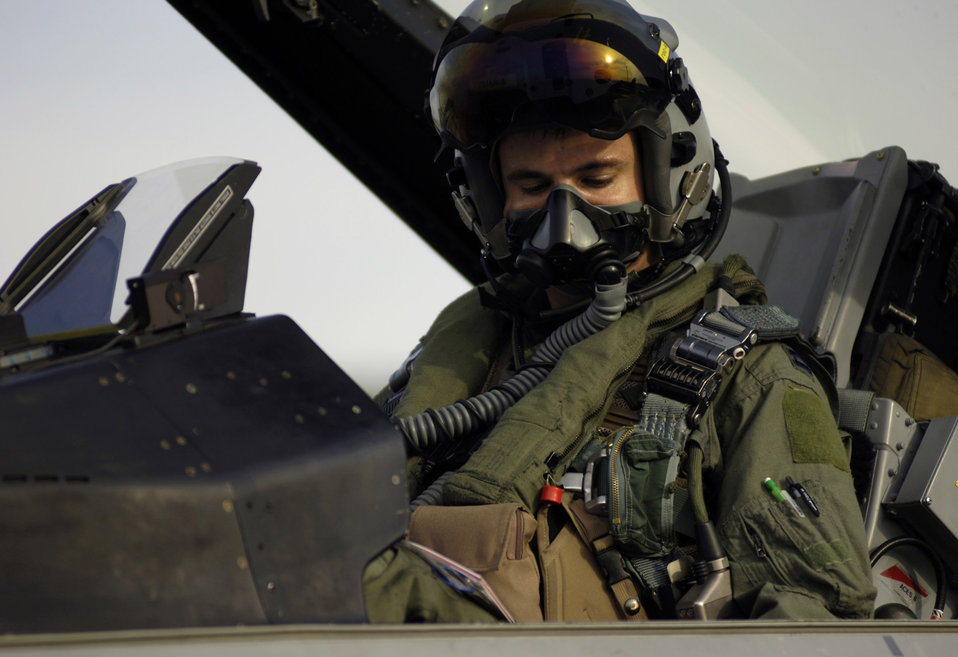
Commando Sling

PAYA LEBAR AIR BASE, Singapore -- Capt. Michael May conducts a preflight check of an F-16 Fighting Falcon before a mission here Nov. 9 during Exercise Commando Sling. Captain May is from the 14th Fighter Squadron at Misawa Air Base, Japan.